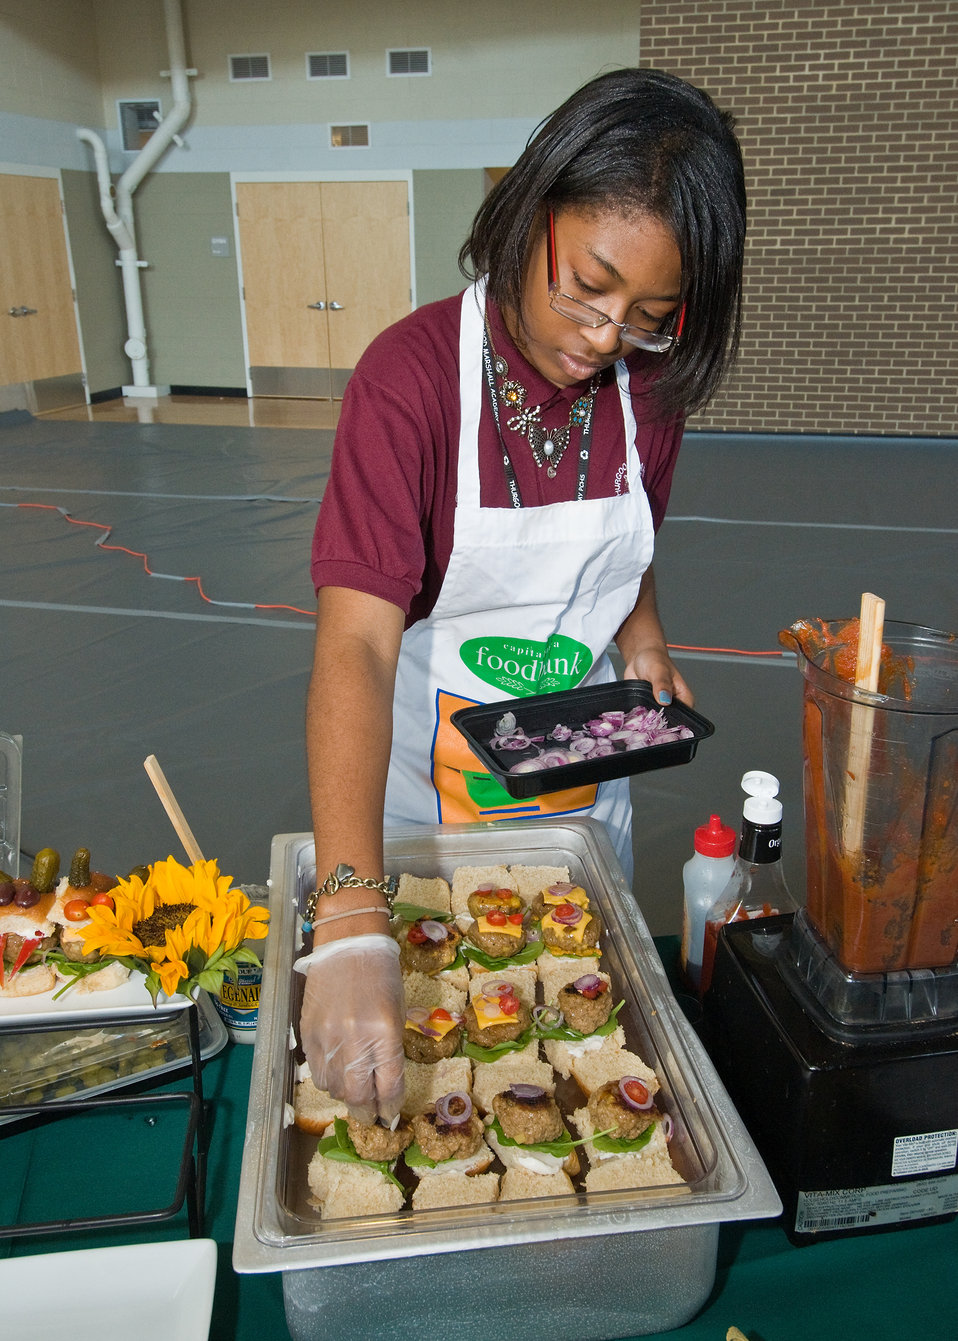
Teasia Capies a sophomore at Thurgood Marshall Academy puts the finishing touches on 'Happy Face Sliders' the recipe she prepared with Chef Lauren Van der Pool 'Café Green' and Vander der Pool Gourmet for the Chef Competition of the D.C. Farm to School and D.C. School Garden Week at the Savoy Elementary and Thurgood Marshall Academy shared campus in Washington, DC, Tuesday, October 12, 2010. At the event related to the Iron Chef competition local chef’s and student sous chef’s created healthy, delicious recipes using local apple varieties to be judged by the students themselves. School children and a partnership of community organizations have responded to First Lady Michelle Obama’s goal to end childhood obesity by building school gardens, providing healthier foods in school meals, and helping kids connect with local food and agriculture. USDA Photo 10di1522-56 by Bob Nichols.